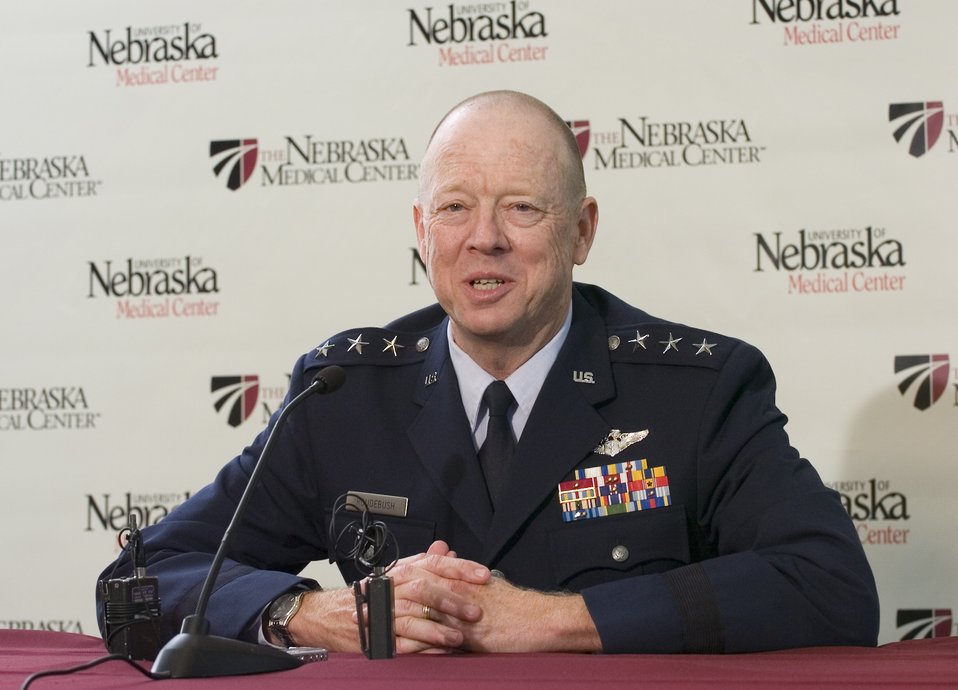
Air Force surgeon general returns to Heartland

Lt. Gen. (Dr.) James G. Roudebush talks with news media representative during a visit to his alma mater, the University of Nebraska Medical Center College of Medicine, Aug. 13 in Omaha Neb. General Roudebush is the Air Force surgeon general.